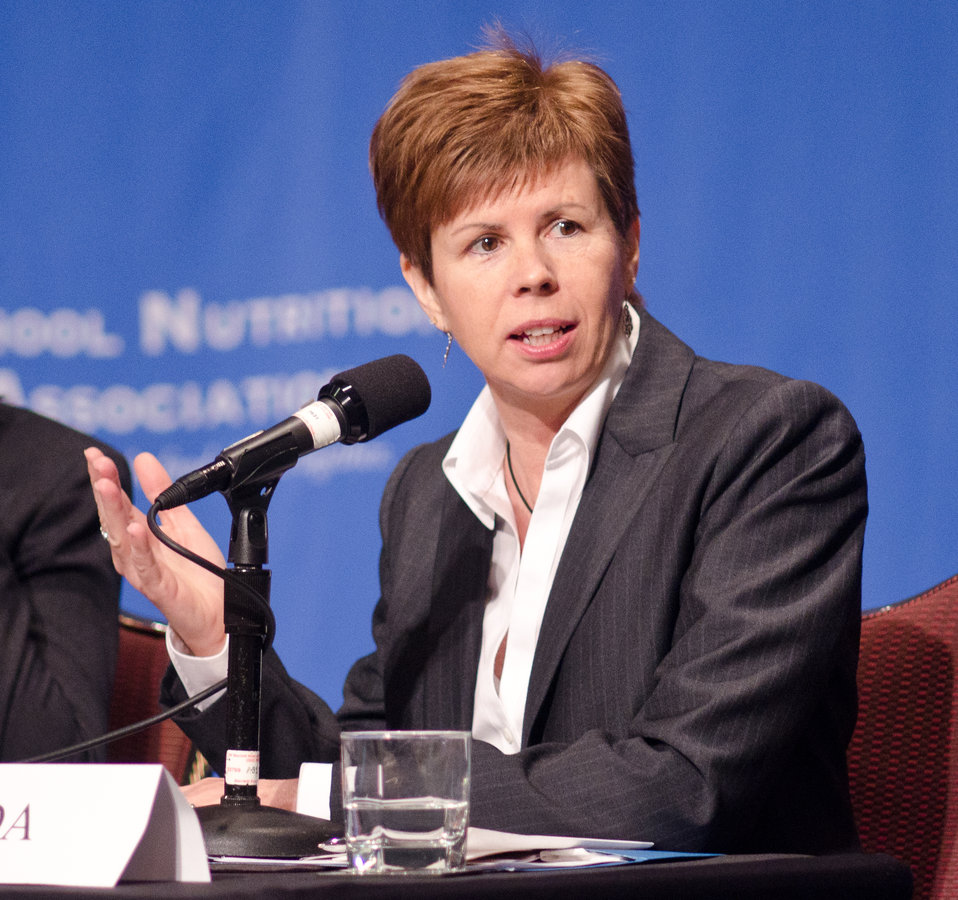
U.S. Department of Agriculture Food Distribution Division Director Cathie McCullough took questions on the Healthy, Hunger-Free Kids Act of 2010 (Public Law 111-296) and the U.S. Department of Agriculture's proposed updated nutrition standards for school meal development, during the School Nutrition Association’s closing general session of their 39th annual Legislative Action Conference at the J.W. Marriott Hotel in Washington, D.C., on Wednesday, March 9, 2011..